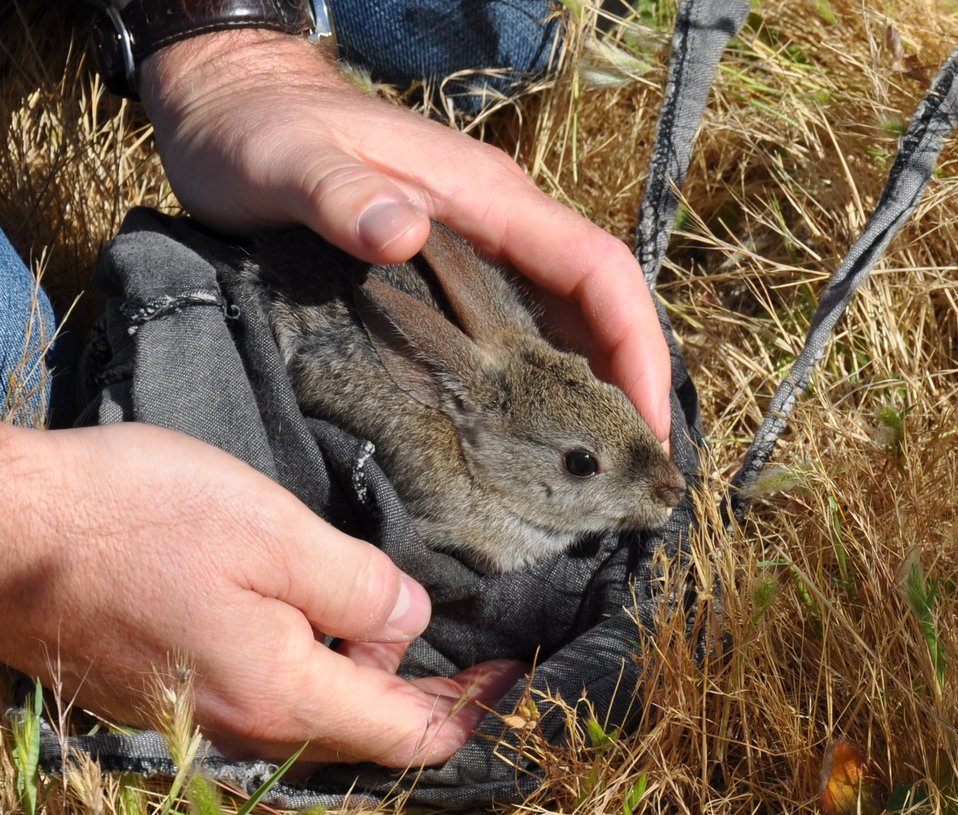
Riparian brush rabbit

This tiny juvenile female will be tagged and is being processed for biometric info at breeding pens run by CSU Stanislaus in San Joaquin County. The rabbit is part of a program to help supplement populations at the San Joaquin National Wildlife Refuge.